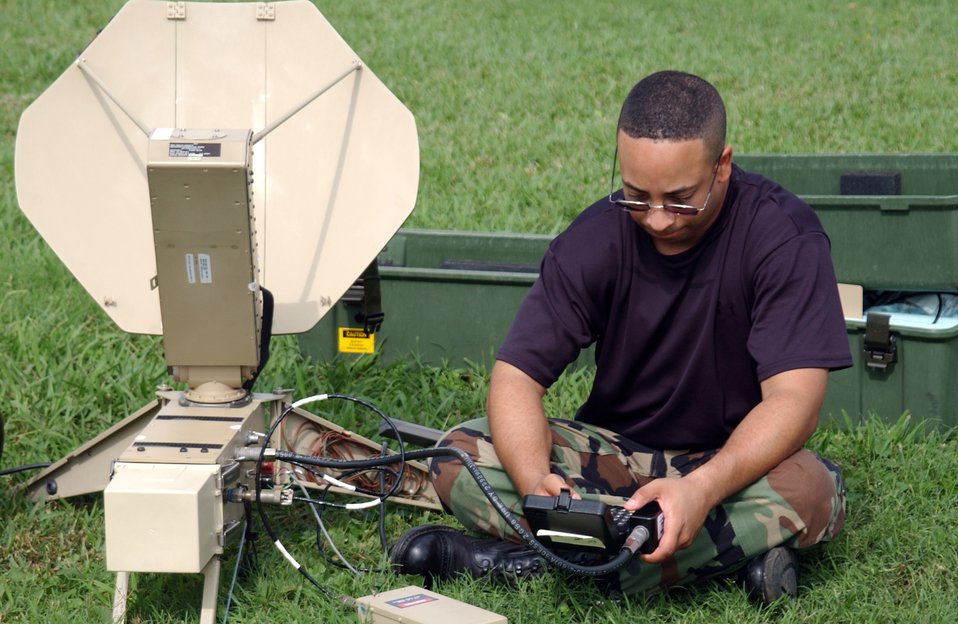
Setting up SCAMP

BARKSDALE AIR FORCE BASE, La. -- Staff Sgt. Dominic Hollingsworth sets up the mobile single channel anti-jam man portable terminal here Oct. 25. The SCAMP is used to communicate with higher headquarters from the field during an operational readiness exercise. Sergeant Hollingsworth is assigned to the 2nd Bomb Wing Command Post.